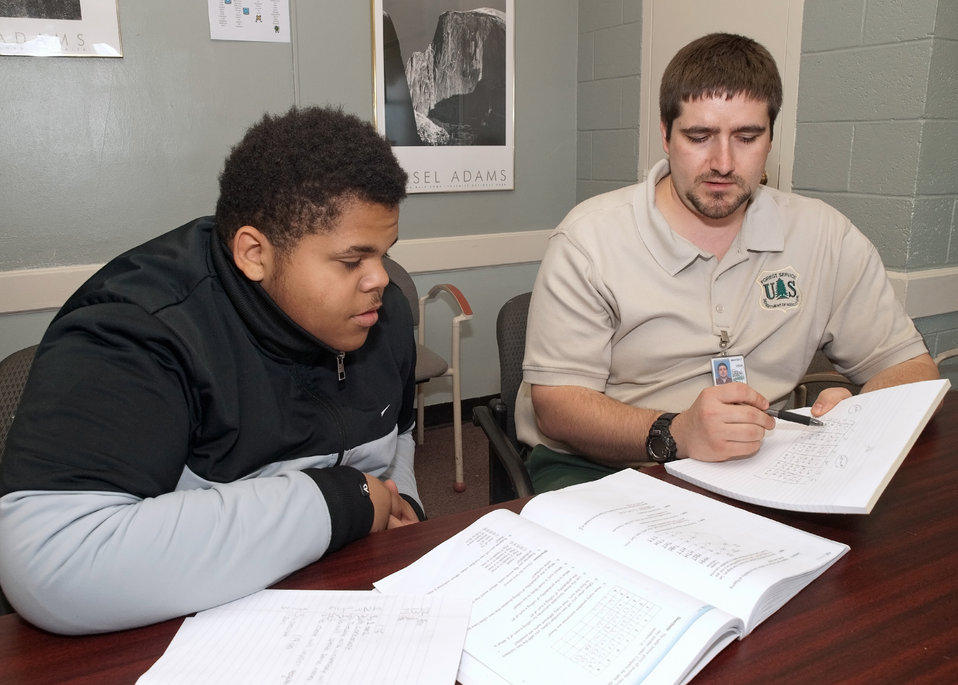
Student Tyler Washington and instructor Jeremy Myers at the Job Civilian Conservation Corp Center (JCCCC) in Harpers Ferry, WV on Nov. 8, 2012. The U.S. Forest Service manages 28 Job Corps Civilian Conservation Centers.